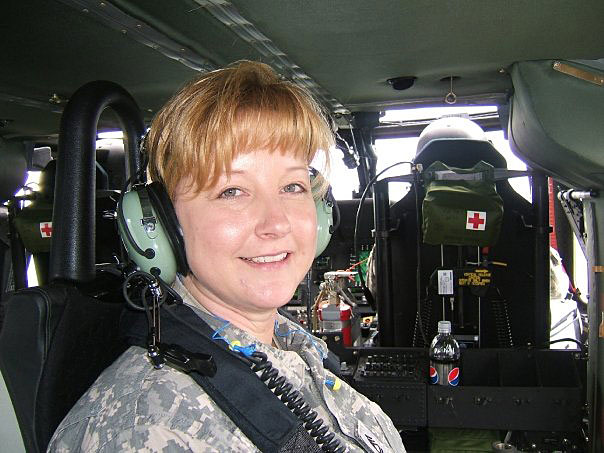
Lisa Meicher -- Midwest Region

Lisa Meicher, Administrative Assistant for Wisconsin Private Lands Office in Madison, served in the Army from 1988 to 2009.